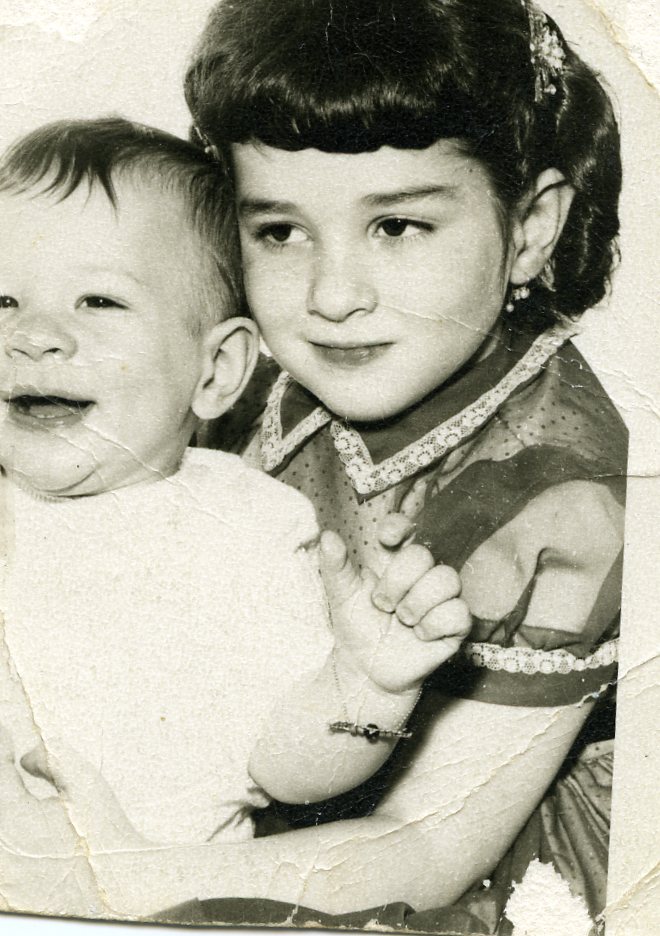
Youth 3

Judge Sonia Sotomayor with family member.